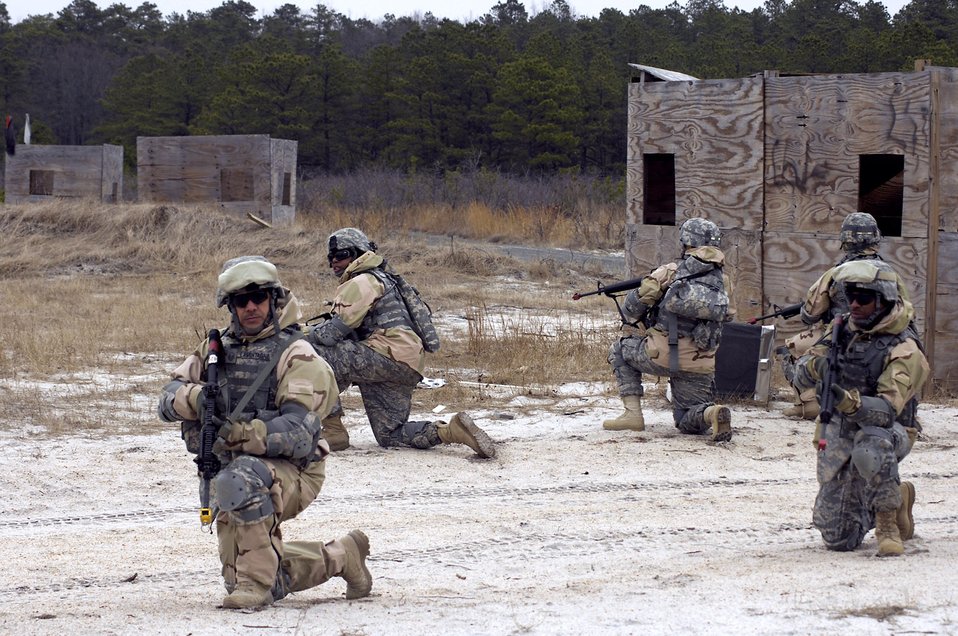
Watch over there

Airmen guard a mock village during individual movement technique training at the Fort Dix, N.J., improvised explosive device range. The Airmen are currently at the installation preparing for a deployment in support of the global war on terrorism.